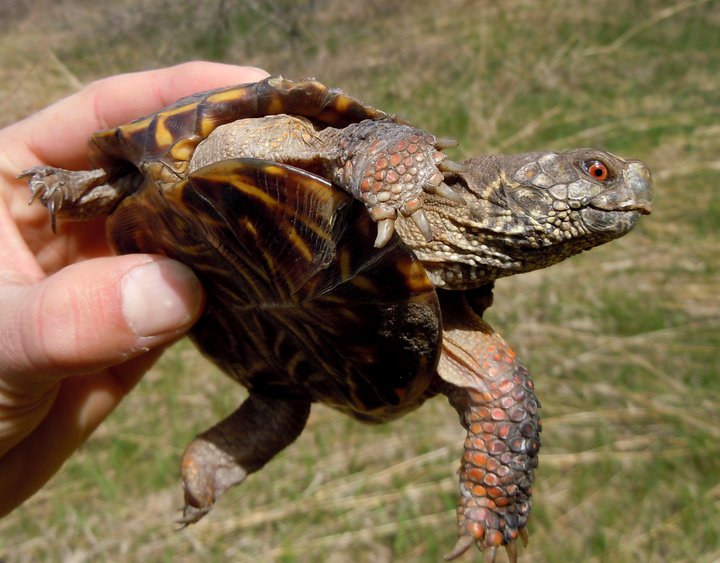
ornate box turtle

Port Louisa National Wildlife Refuge